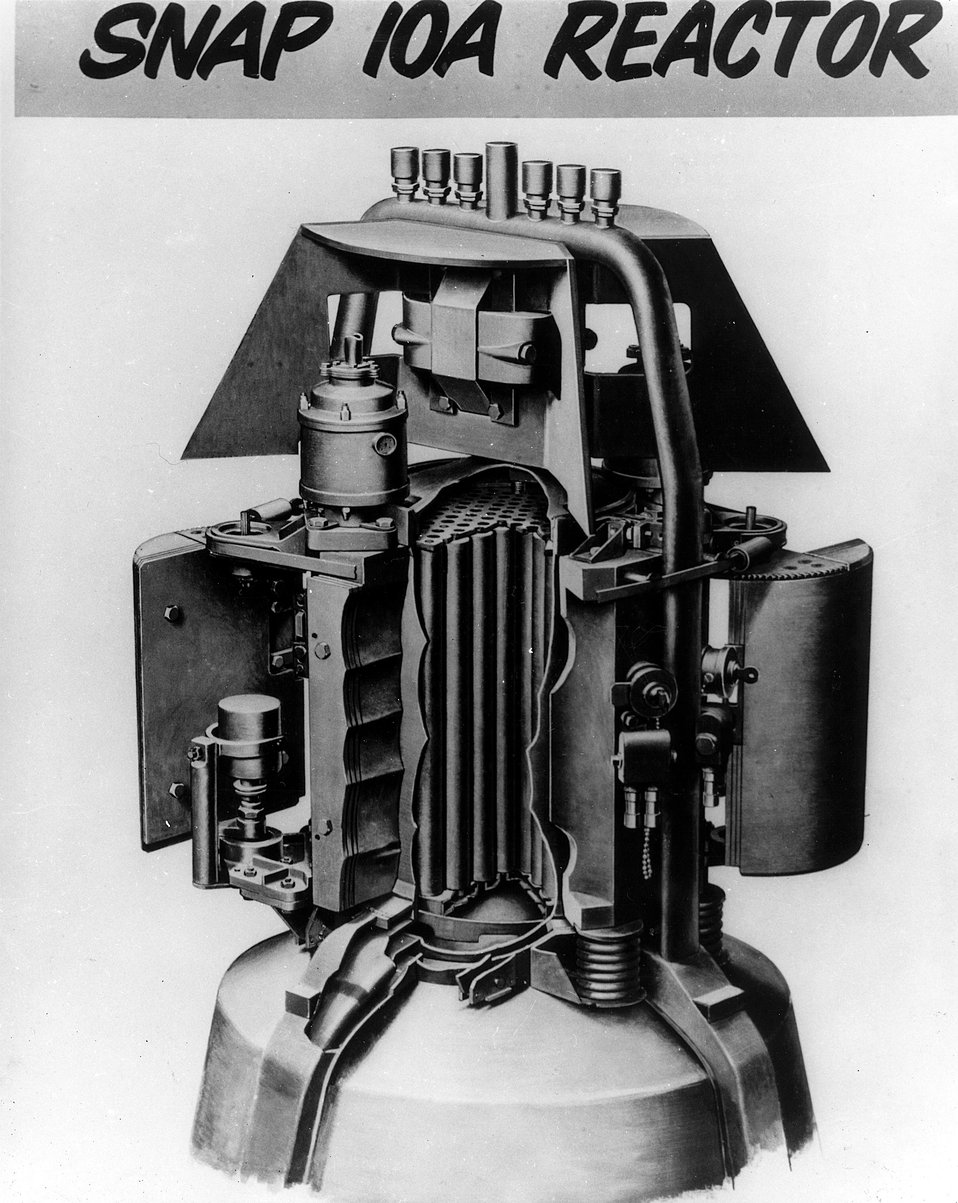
SNAP 10A reactor-a 500 watt compact nuclear system.